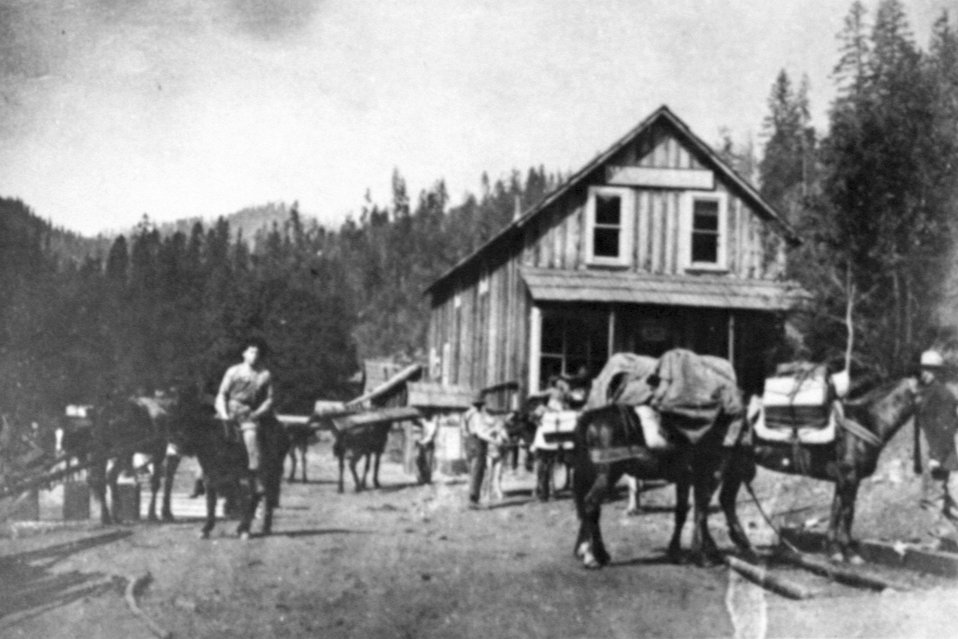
Barlow Brothers store at Galice C. 1909